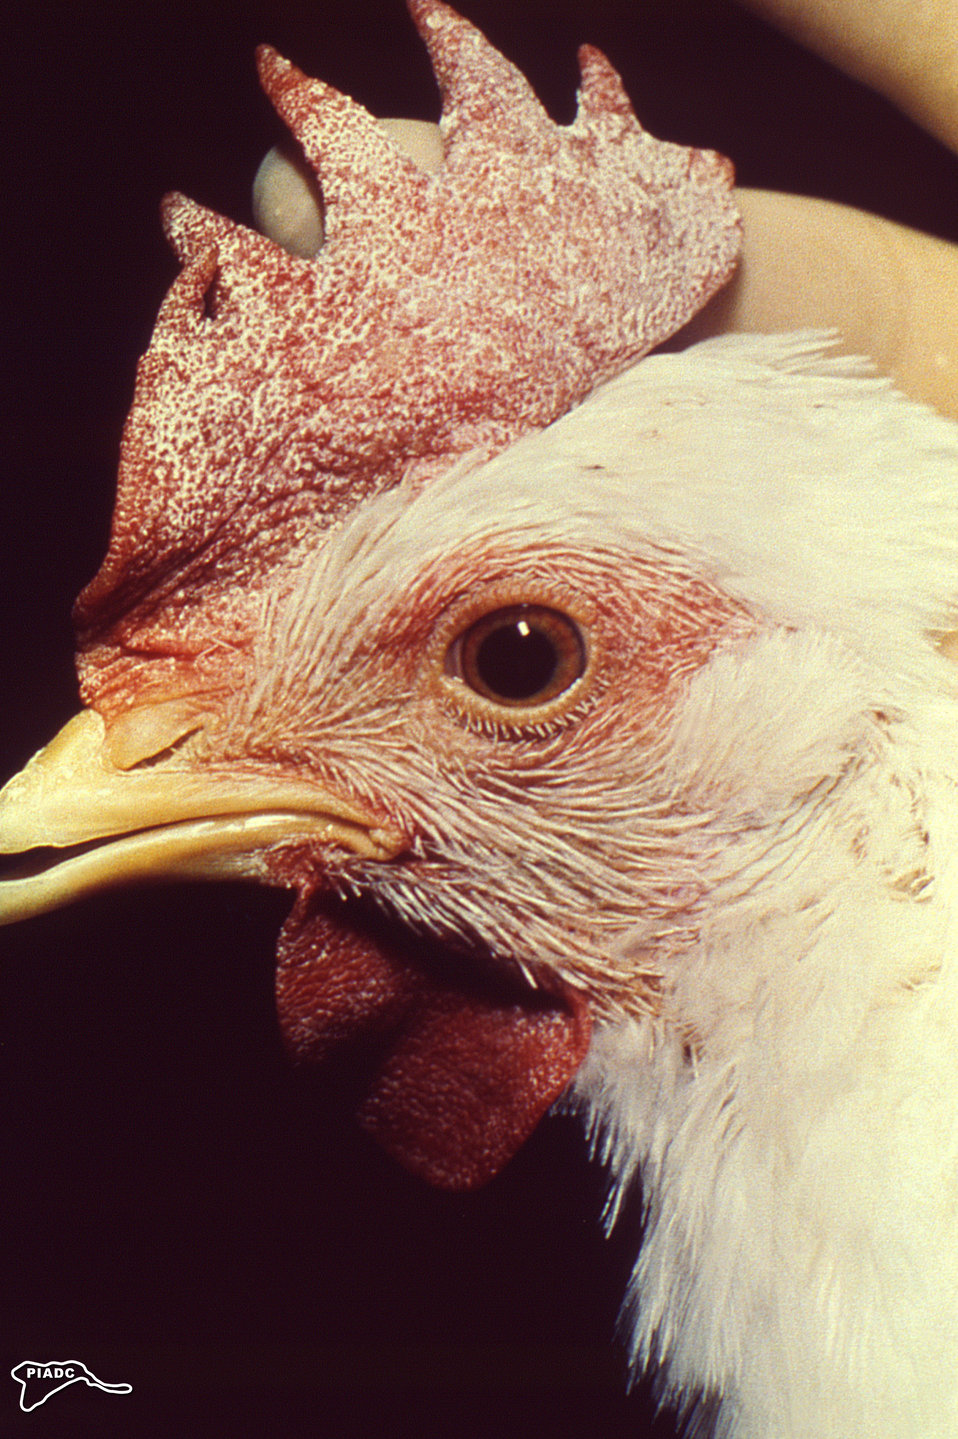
From the 'Illustrated Manual for the Recognition and Diagnosis of Certain Animal Diseases', published in 1982, by the Mexico-United States Commission for the Prevention of Foot and Mouth Disease, this close lateral view of a chicken's head, depicts what appears to be a normal bird, but looking closely you'll notice the pale comb atop its head, which was determined to be due to a velogenic viscerotropic Newcastle disease (VVND) infection. This illness is also known as exotic Newcastle disease, Asiatic or Doyle's form of Newcastle disease.